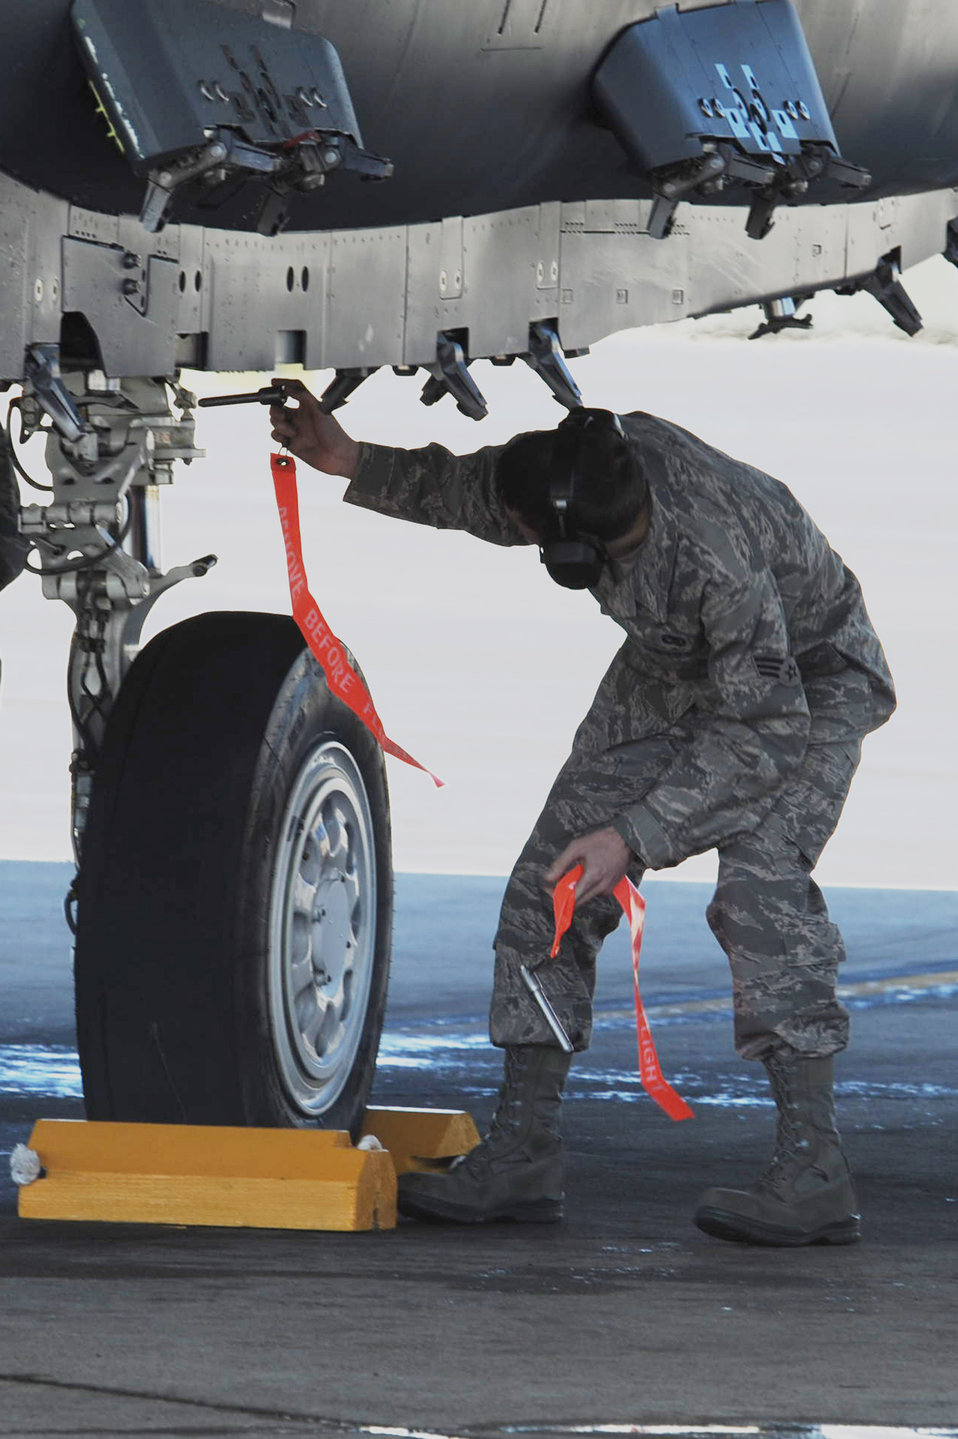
Strike Eagle

Senior Airman Bobby Kerr, a 307th Fighter Squadron crew chief at Seymour Johnson Air Force Base, N.C., inserts safety pins into an F-15E Strike Eagle after a flight March 19, 2010. The 307th FS falls under the 414th Fighter Group, a new Air Force Reserve Command unit standing up on Seymour Johnson AFB to support the growing F-15E Strike Eagle mission.